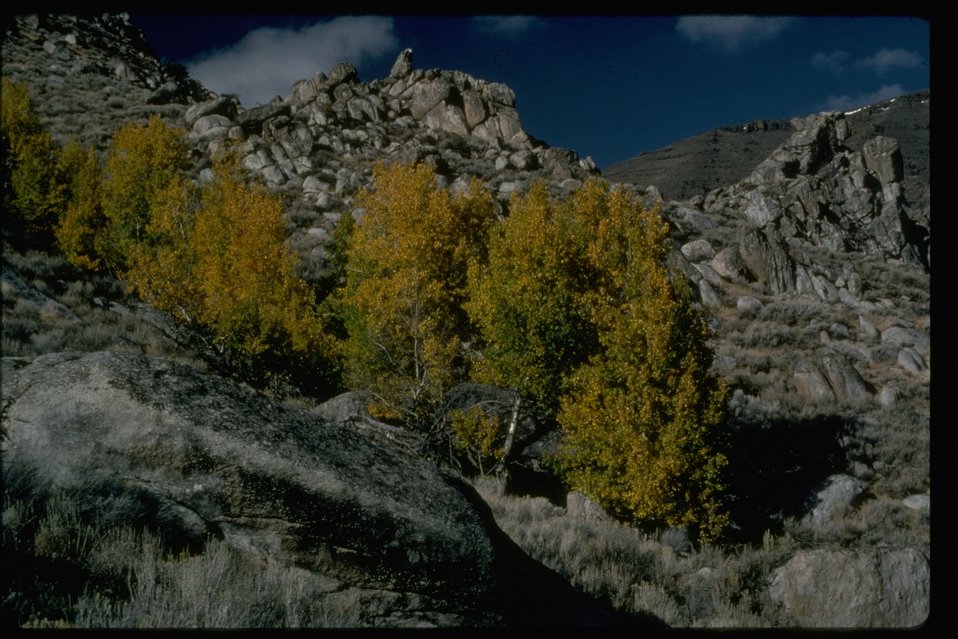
The Disaster Peak Wilderness Study Area. Looking into the Nevada BLM lands, also administrated by the Vale District. OR 3-153